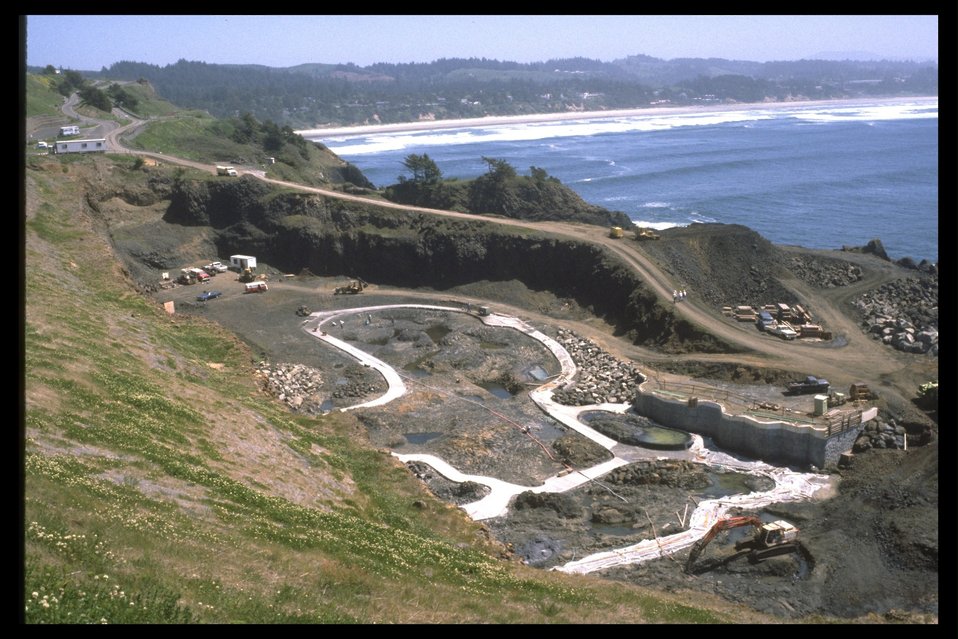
Construction of Quarry Cove tidepools.